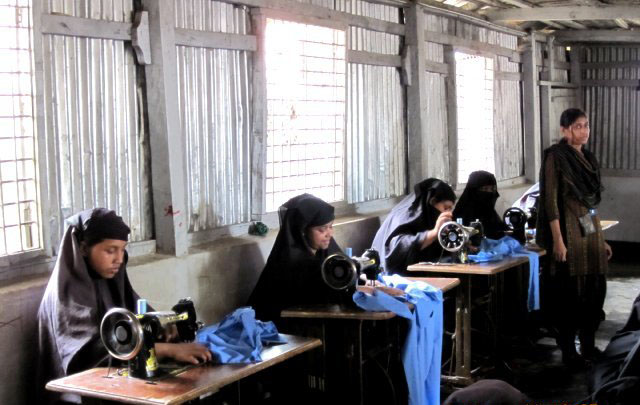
Refugee Women Work on Sewing Girl's School Uniforms

Refugee women work on sewing girl’s school uniforms at Kutupalong camp in Bangladesh on June 7, 2011. Much of the refugees’ clothing is produced in-camp in vocational training workshops that PRM funds.